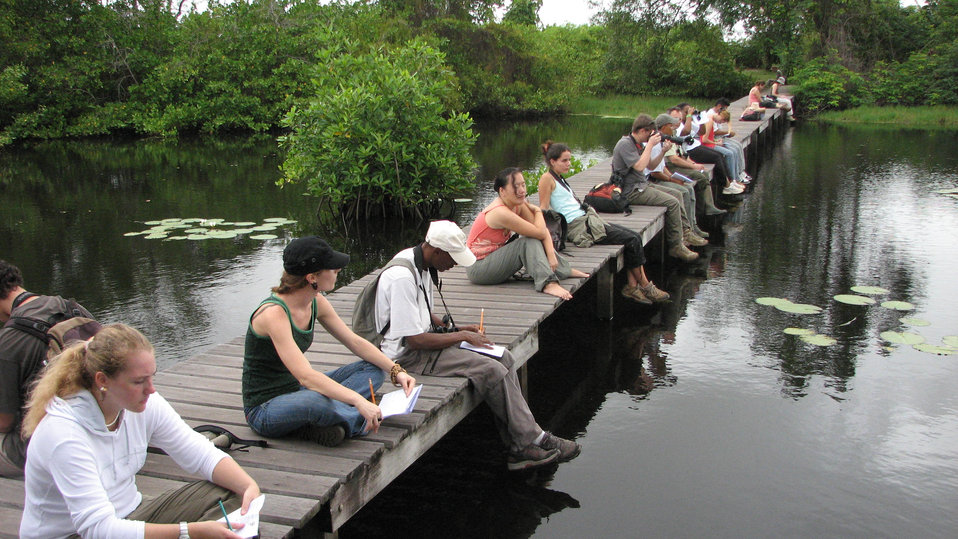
Sound Mapping - 2

Sound mapping exercise at an SCSCB training course.